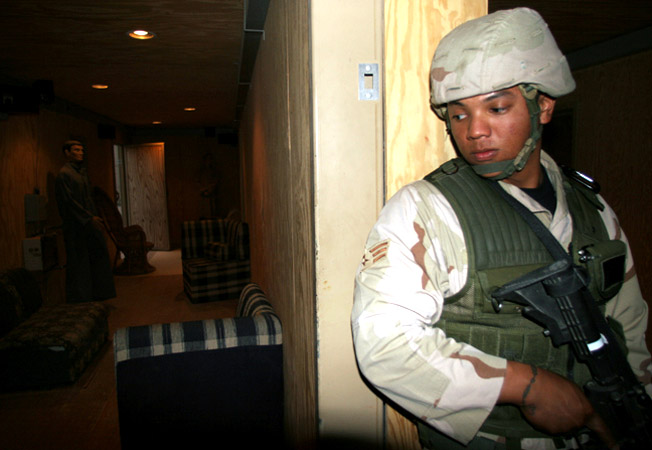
Mission of security forces constantly evolving

Senior Airman Paris Carman checks around the doorway of a simulated Iraqi home during